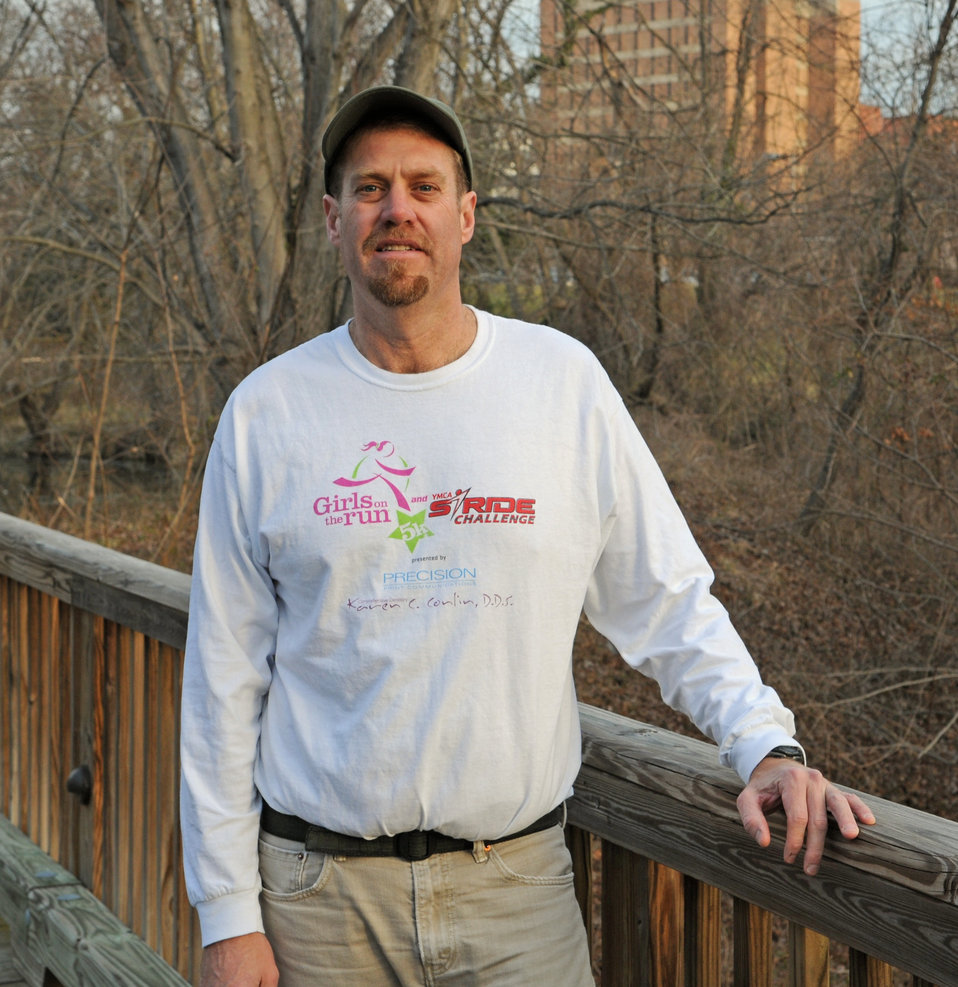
MorganGrove-a

U. S. Forest Service Northern Research Station research scientist Morgan Grove stands outside his office in Baltimore, MD on Feb. 13, 2013.